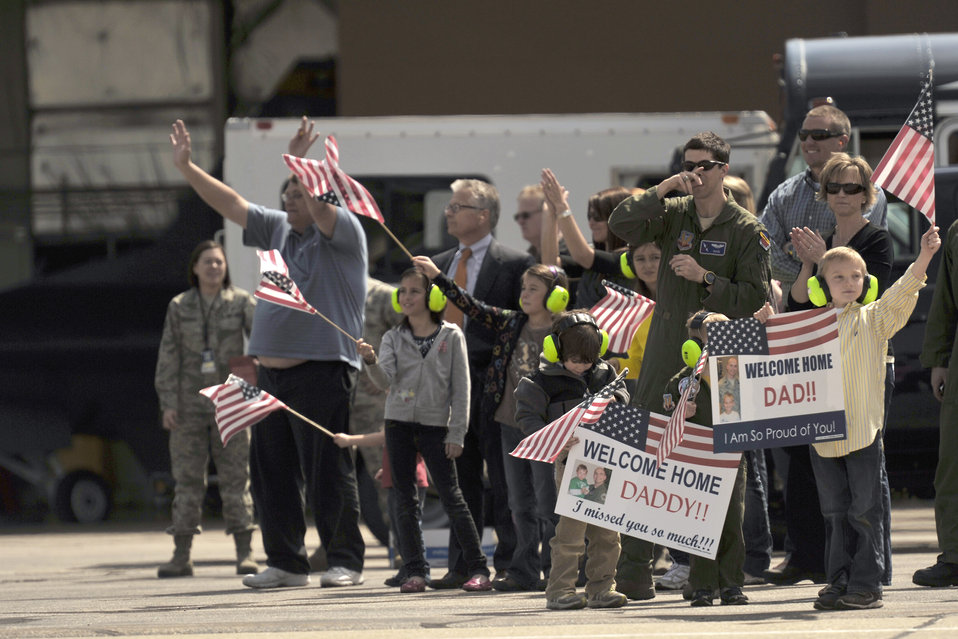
Airmen arrive

A crowd of family members and friends cheer on the arriving F-16 Fighting Falcon pilots as they taxi in April 15, 2011, at Hill Air Force Base, Utah. These jets are the first of a team returning from a six-month deployment to Bagram Air Base, Afghanistan.